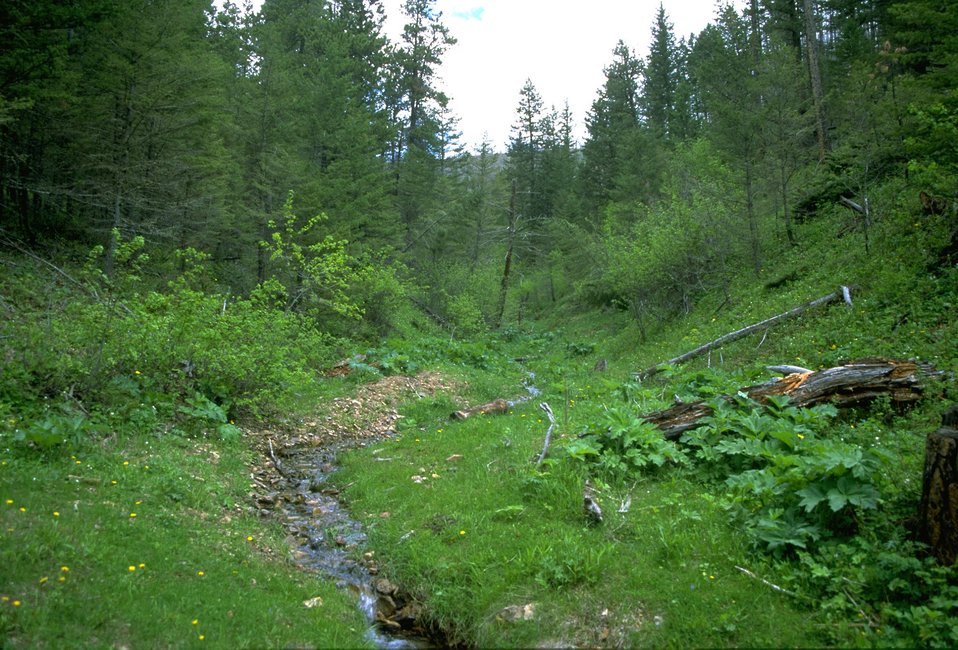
A stream flowing through a luxuriant riparian area